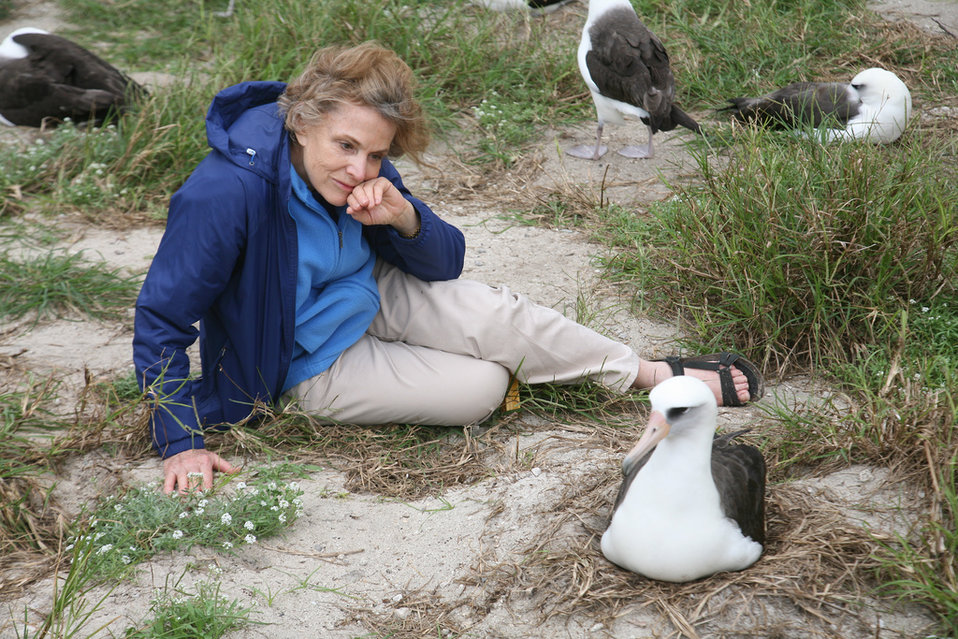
Sylvia Earle and Wisdom the Albatross

Famed oceanographer Dr. Sylvia Earle spends a moment with Wisdom, the oldest known living bird. The Laysan albatross is at least 61. Wisdom and her chick survived a tsunami on Midway in March 2011. In January 2012 Wisdom was nesting again.
Midway Atoll National Wildlife Refuge,
Papahānaumokuākea Marine National Monument
January 2012